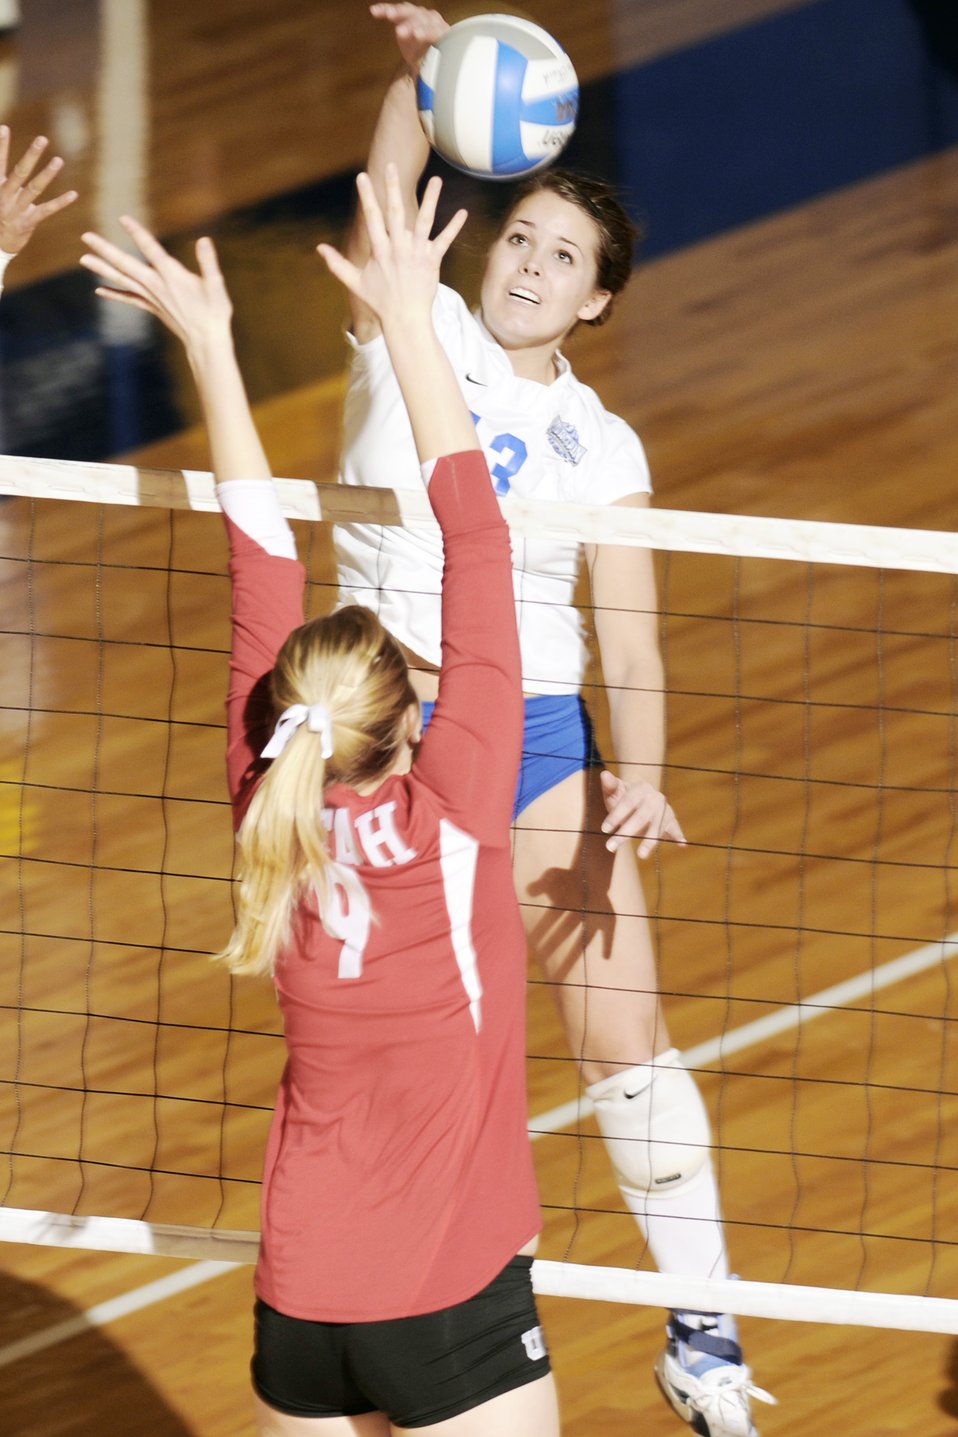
Academy women's volleyball team ends season

U.S. Air Force Academy junior Caroline Kurtz goes up for the kill during the final match of the season against Utah at Clune Arena Nov. 21, 2009. The Falcons lost a three-set decision 25-18, 25-16, and 27-25.